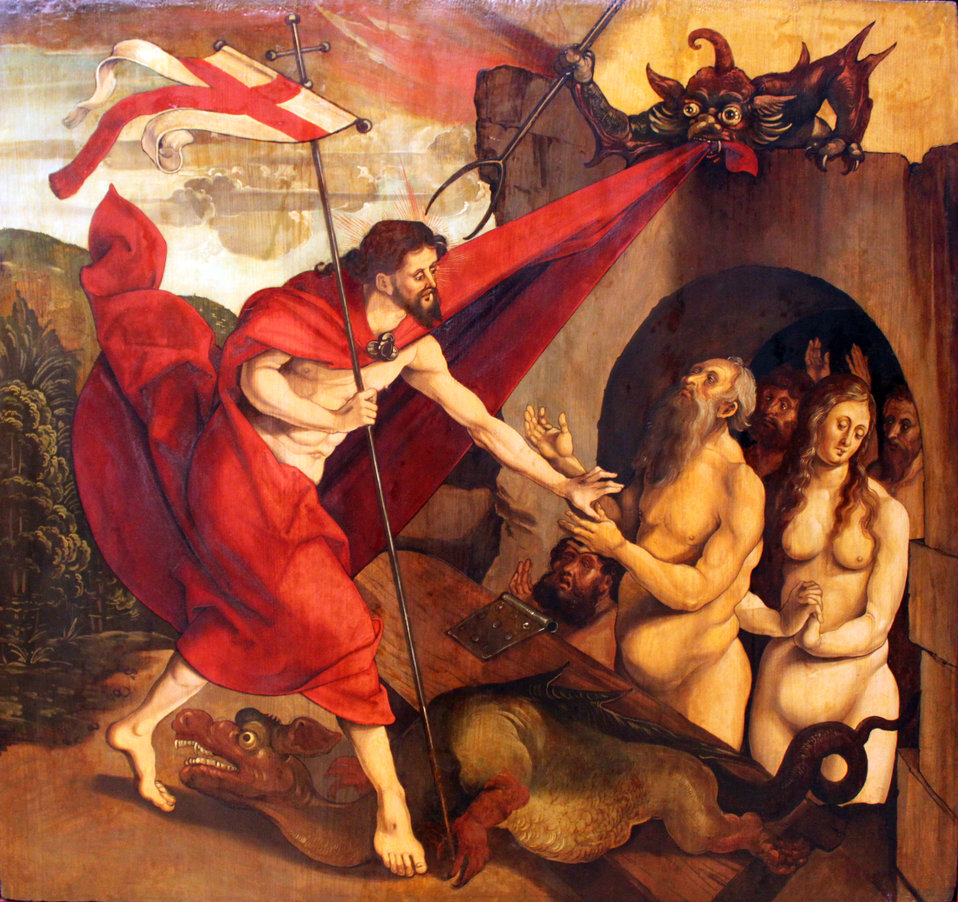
1511 Christus in der Vorhoelle anagoria